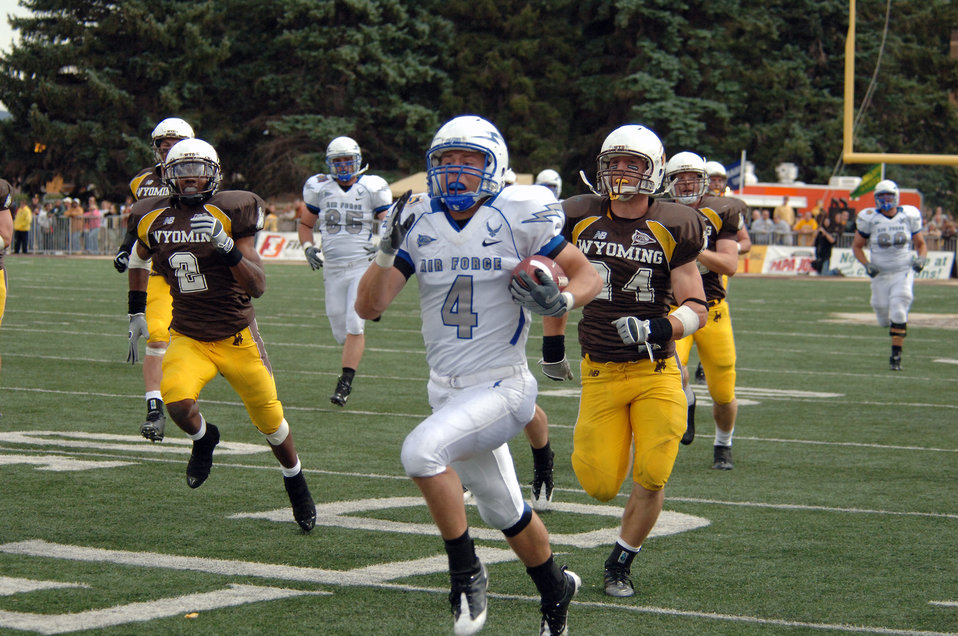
Can't catch me!

U.S. Air Force Academy wide receiver Kyle Halderman races down the sideline for a 74-yard gain, which set up the Falcons' first game touchdown Sept. 6 in Laramie, Wyo. Halderman finished with three rushes for 85 yards in the Falcons' 23-3 win over the University of Wyoming.